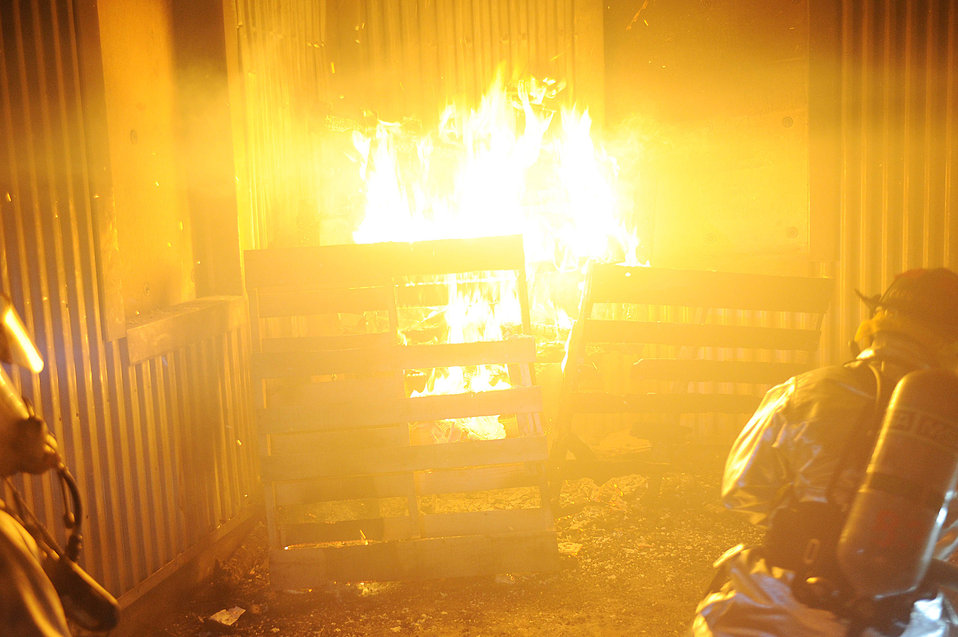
Ellsworth firefighters train at night

A house